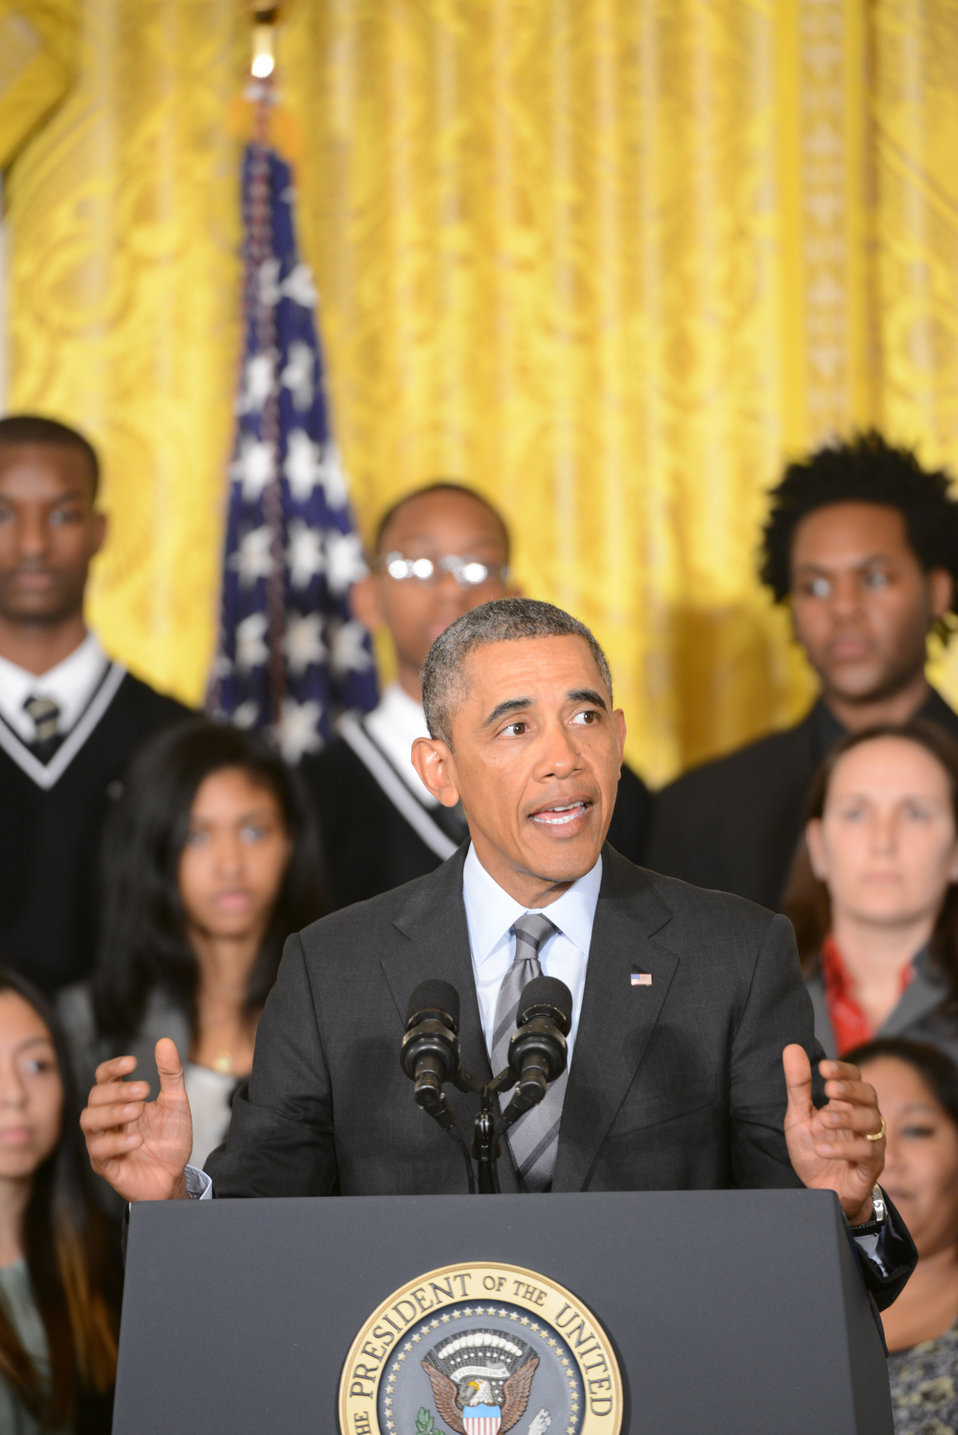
President Barack Obama announces the first five “Promise Zones,” located in San Antonio, TX, Philadelphia, PA, Los Angeles, CA, Southeastern Kentucky, and the Choctaw Nation of Oklahoma.